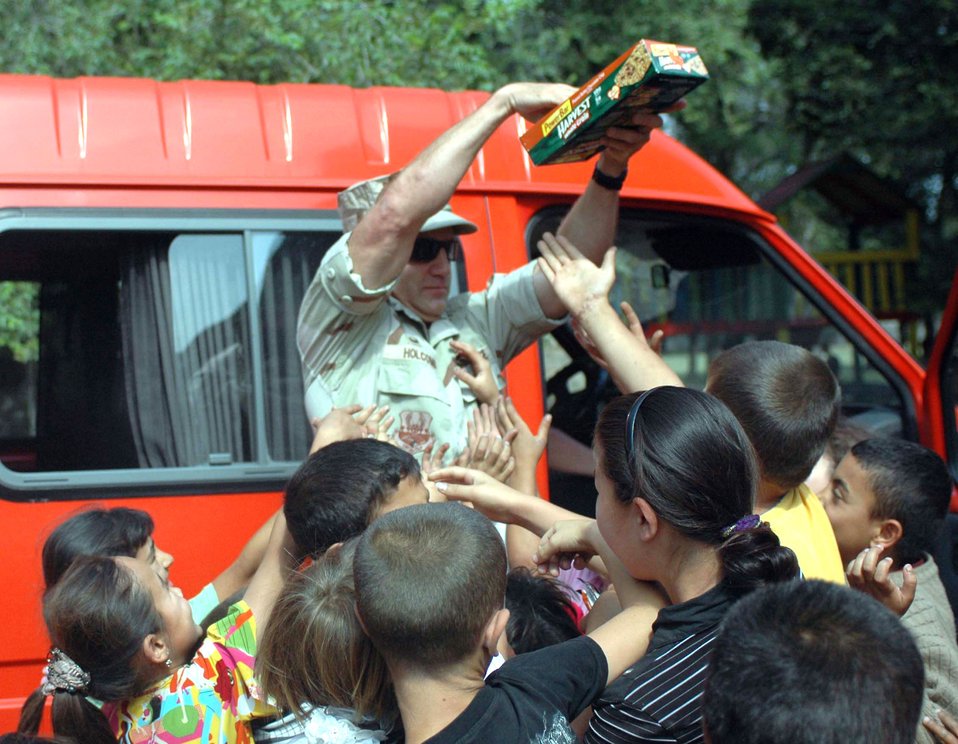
376th ESFS dedicates new children's playground

Col. Arnold Holcomb passes out nutrition bars to Oktobersky Village, Kyrgyzstan, children on Thursday, June 22. Colonel Holcomb and other members from the 376th Air Expeditionary Wing at Manas Air Base, Kyrgyzstan, dedicated a new children's playground, built by members of the 376th Expeditionary Security Forces and Civil Engineer squadrons. Colonel Holcomb is deployed from the 35th Mission Support Group at Misawa Air Base, Japan.